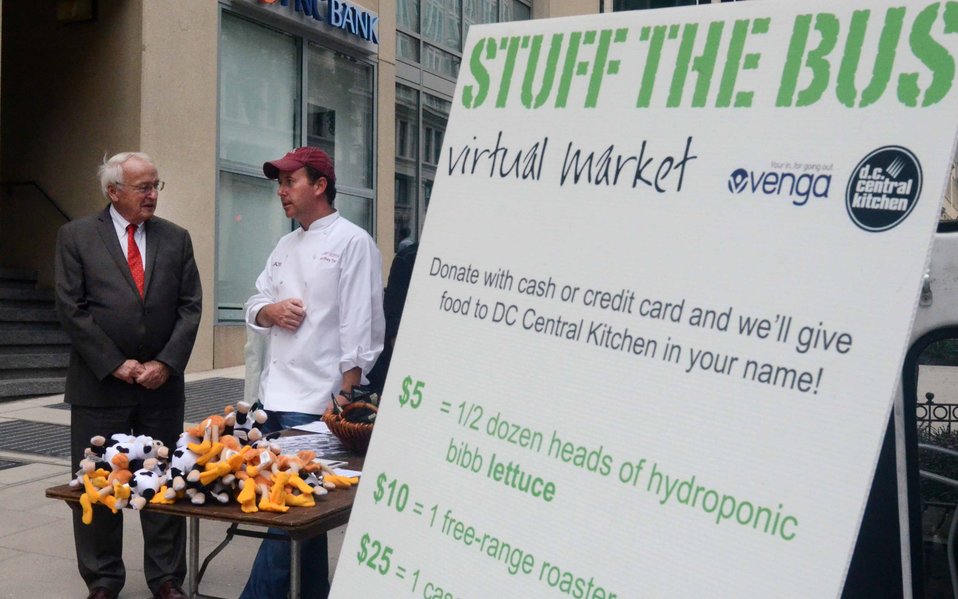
Under Secretary for Food, Nutrition and Consumer Service, Kevin Concannon, (left) talks with Chef Geoffrey Tracy (right) at the “Stuff the Bus Tour” on Wednesday, September 21, 2011, in Washington D.C. The U.S. Department of Agriculture, Food, Nutrition and Consumer Service working with the D.C. Central Kitchen and Venga the sponsors of the “Stuff the Bus Tour.' During the next two weeks people can either bring donations or buy products from the virtual markets located at the events. All food and proceeds go to D.C. Central Kitchen benefiting thousands of people in the D.C. area.